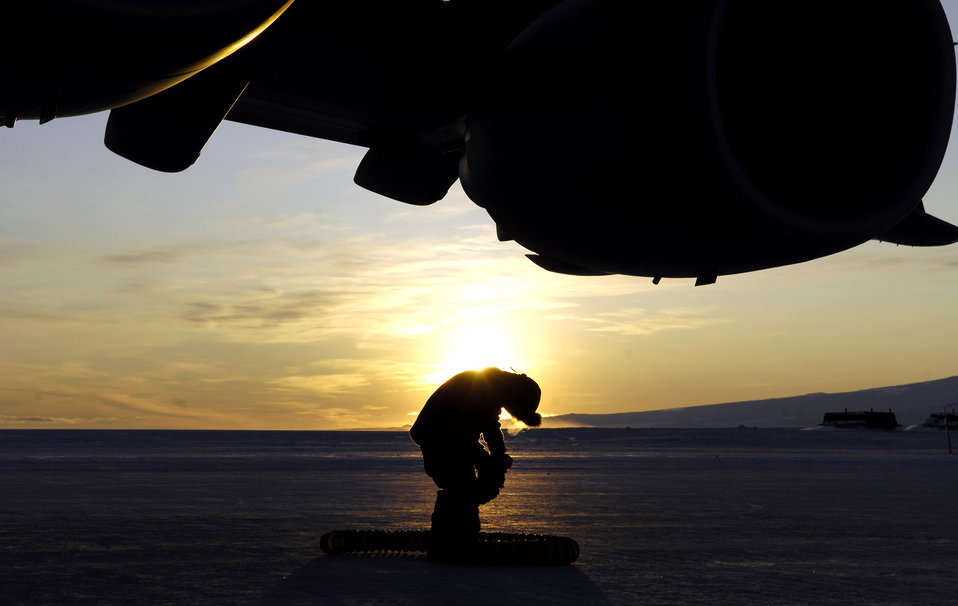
Winter flights to Antarctica wrap up

Senior Airman Christian Recene collapses a heater hose that was used to keep the engines of a C-17 Globemaster III warm during an Operation Deep Freeze winter fly-in mission Aug. 25 at Pegasus White Ice Runway, Antarctica. Because of the extreme temperatures, heaters are used on the aircraft to prevent maintenance problems and keep it functioning properly upon engine start-up. A C-17 and 31 Airmen from McChord Air Force Base, Wash., conducted the annual winter fly-in augmentation of scientists, support staff, food and equipment for the U.S. Antarctic Program at McMurdo Station, Antarctica.